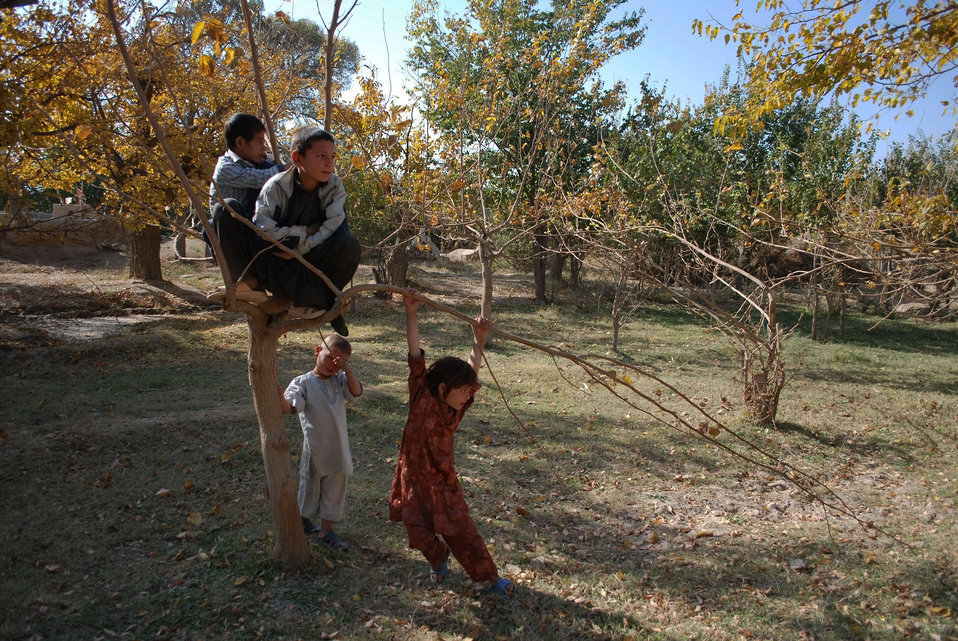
'On the Road' in Balkh Province